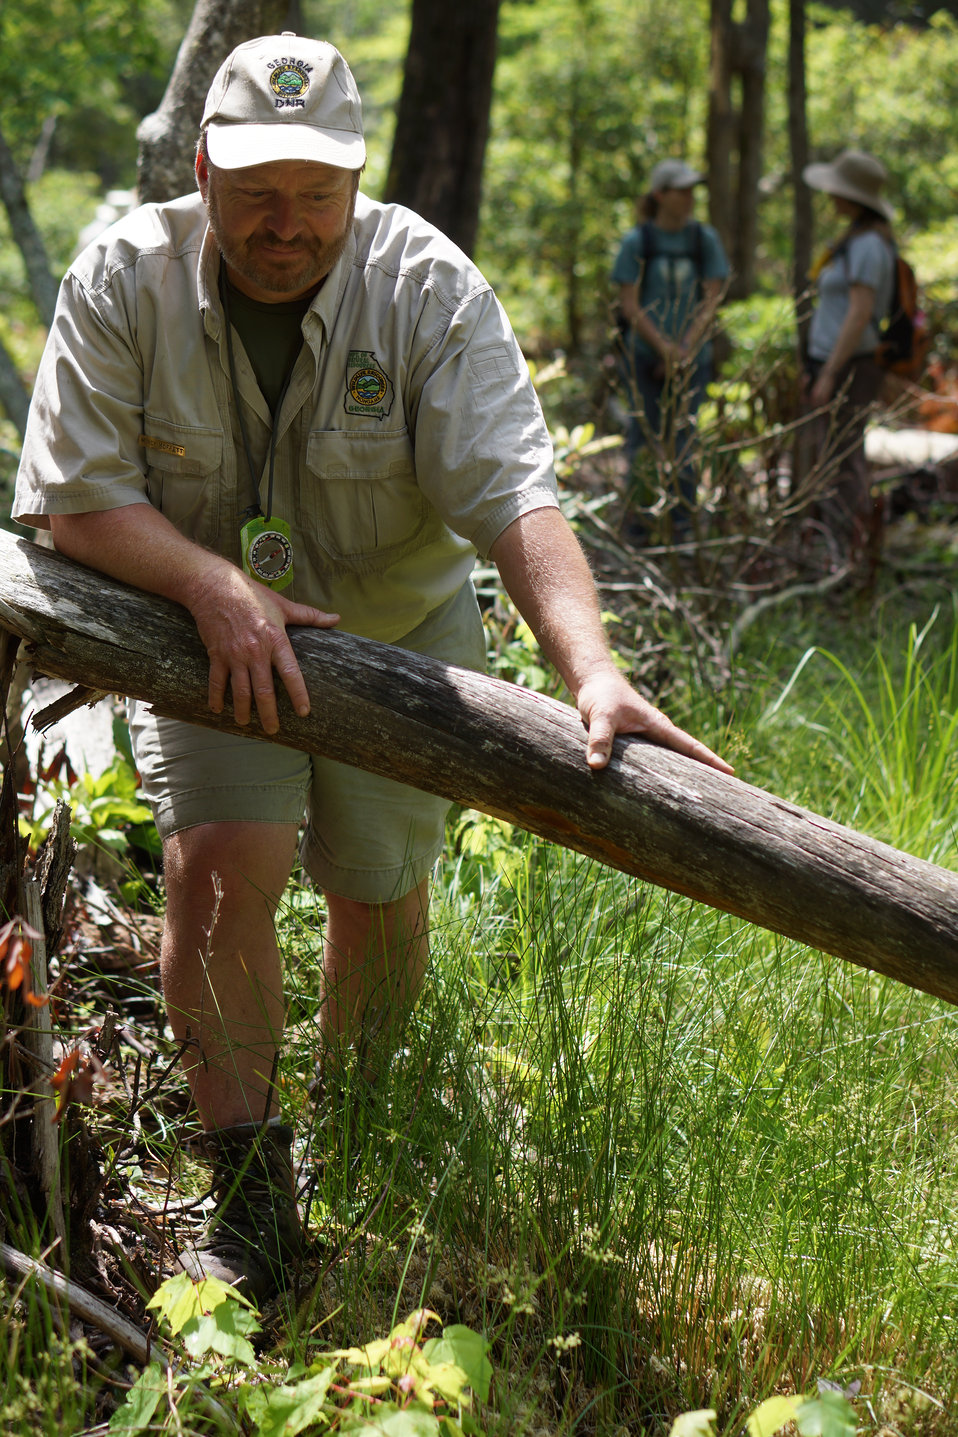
Mincy Moffet

In May, bog conservationists from Tennessee, North Carolina, and Georgia convened in the north Georgia mountains for the spring, 2014 meeting of the Bog Learning Network. The event provided an opportunity for biologists to see, first hand, the result of management efforts at two north Georgia bogs. More importantly, the outings provided an opportunity to share innovative approaches to bog management, such as the role of the Georgia Plant Conservation Alliance in conserving rare plants and coordinating a cadre of volunteers to work on bog management.

The Bog Learning Network was convened in the winter of 2013 as a way to bring together people working for bog conservation across the Southern Appalachians. Southern Appalachian bogs are one of North America’s rarest habitats and home to many rare plants and animals.